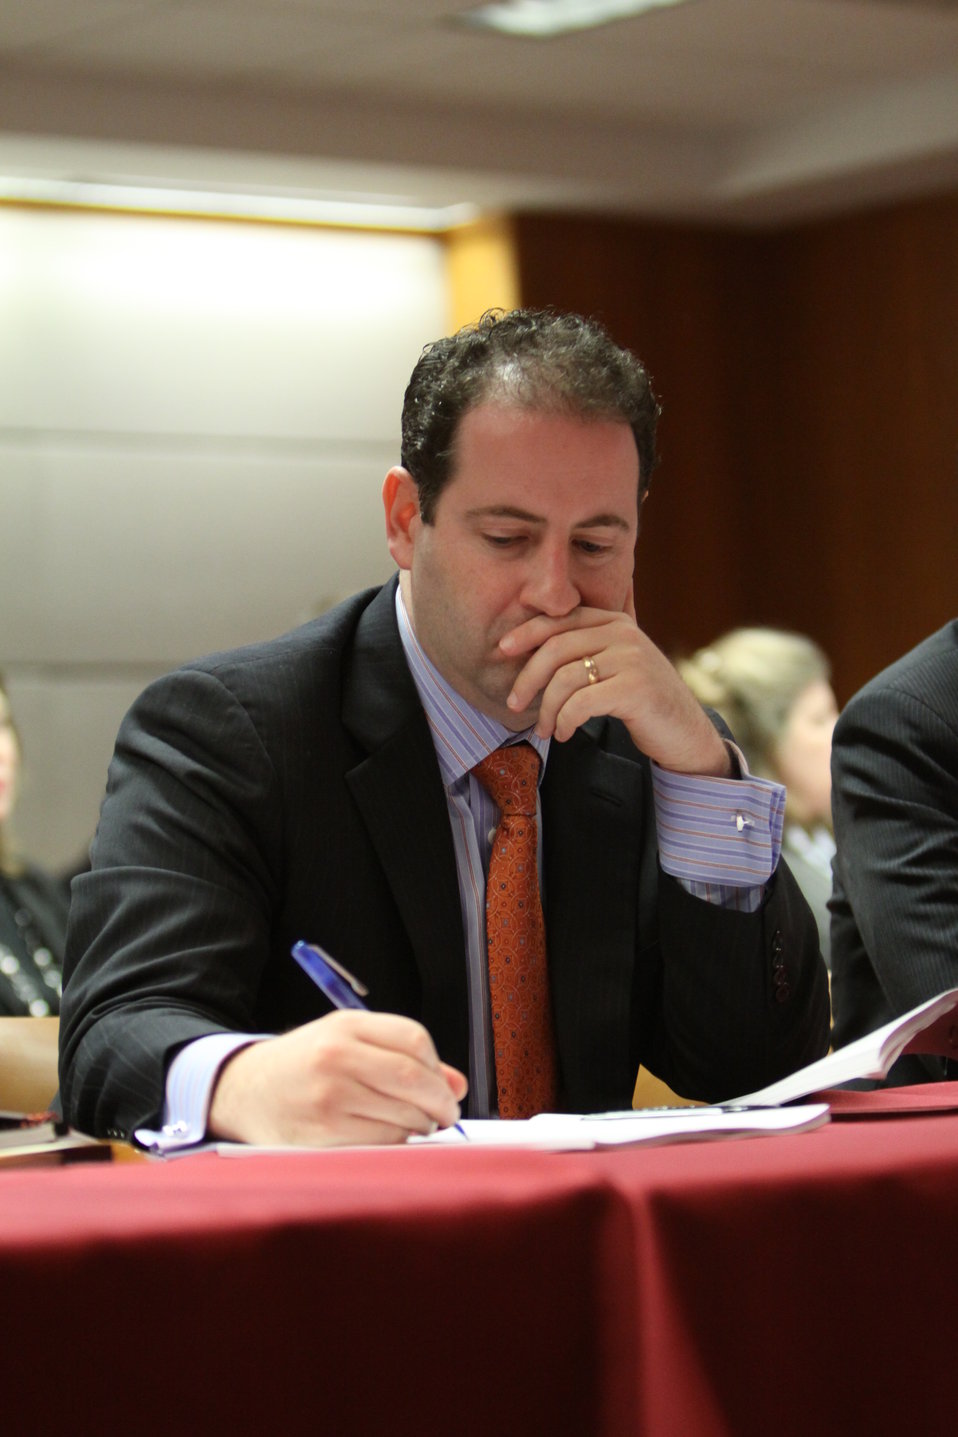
Rick Kaplan, Chief Counsel and Senior Legal Advisor to the Chairman